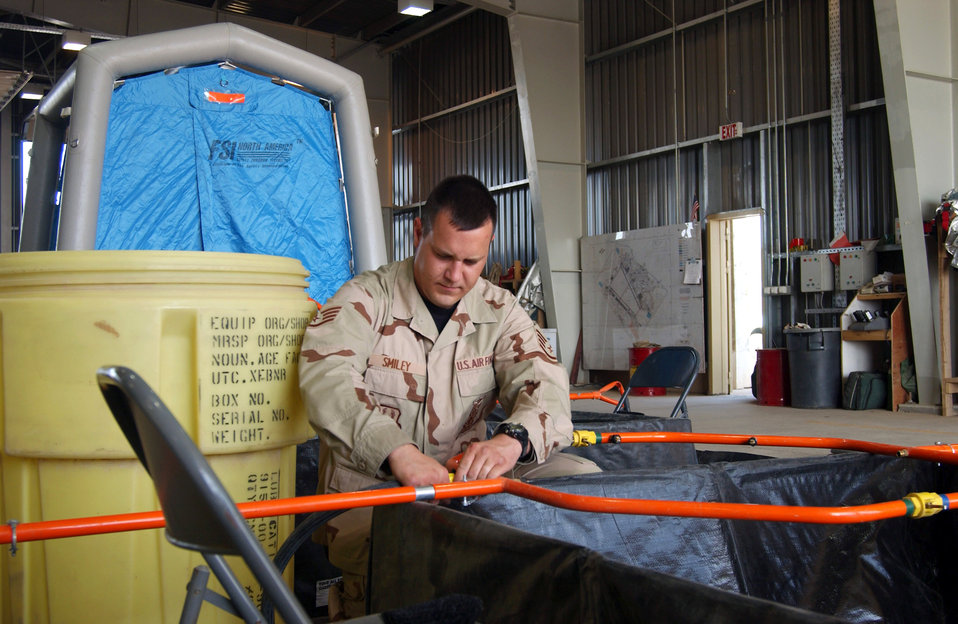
Hazmat training in Iraq

Staff Sgt. Chris Smiley sets up a hazardous-material decontamination line June 5 for a training exercise at Balad Air Base, Iraq. Sergeant Smiley is a firefighter with the 332nd Expeditionary Civil Engineer Squadron Fire and Emergency Services Flight.